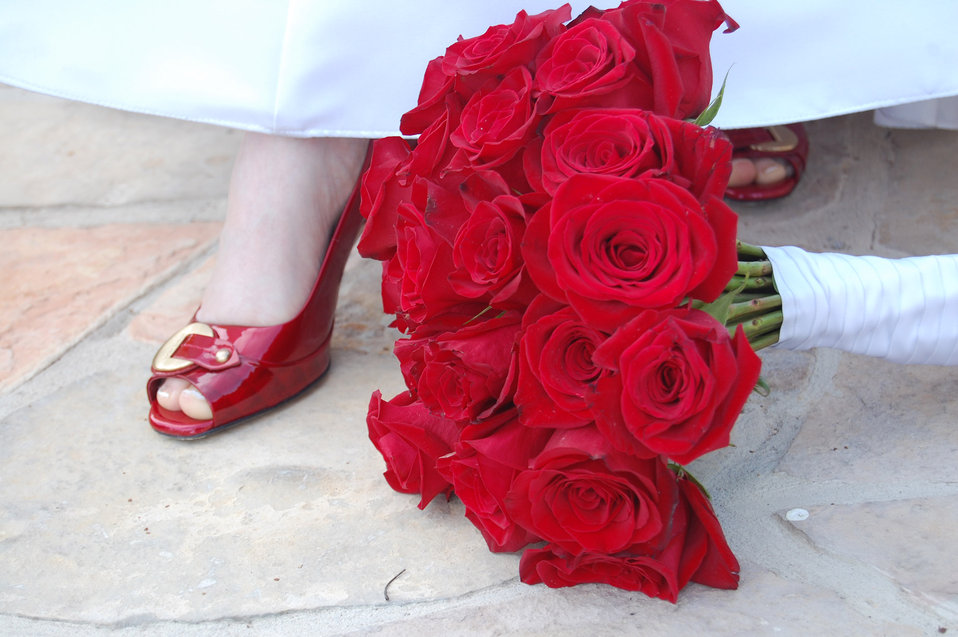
Wedding day in red

Red shoe and red roses on wedding day.